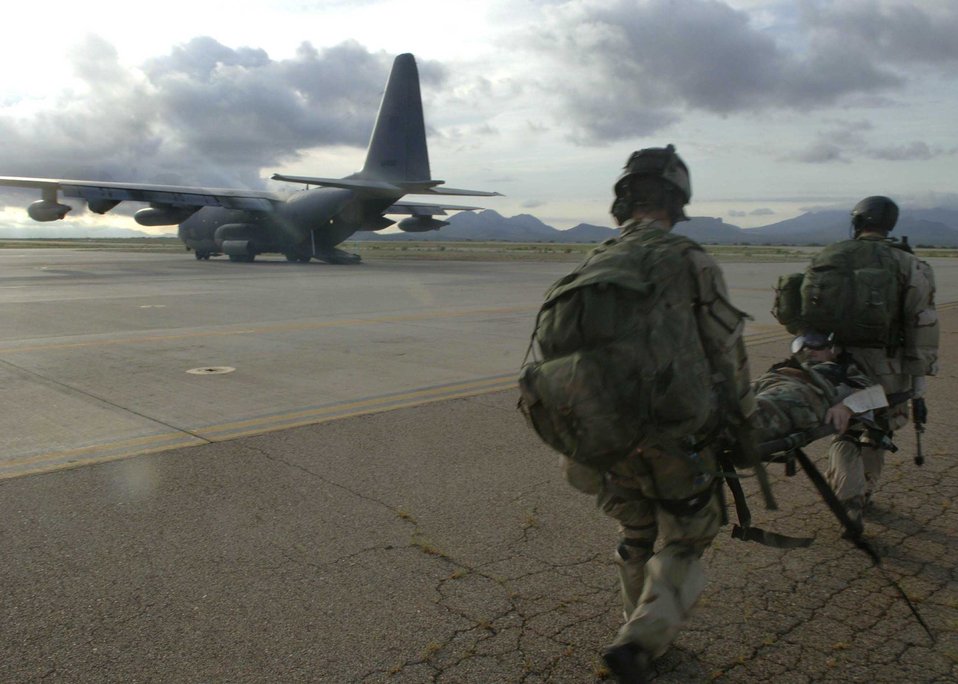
Angel Thunder

Pararescuemen from the 48th Rescue Squadron carry a simulated mass casualty survivor July 27 into a HC-130 as part of exercise Angel Thunder. The mass casualty scenario involved two CH-47 Chinook helicopters crashing. Once on the ground, pararescuemen triaged survivors and relocated them to a casualty collection point. They were then flown to Davis-Monthan Air Force Base to a simulated level 2/3 medical facility. This part of exercise Angel Thunder involved the 48th, 58th, 66th, 79th and 305th Rescue Squadrons as well as air support from the 358th Fighter Squadron.